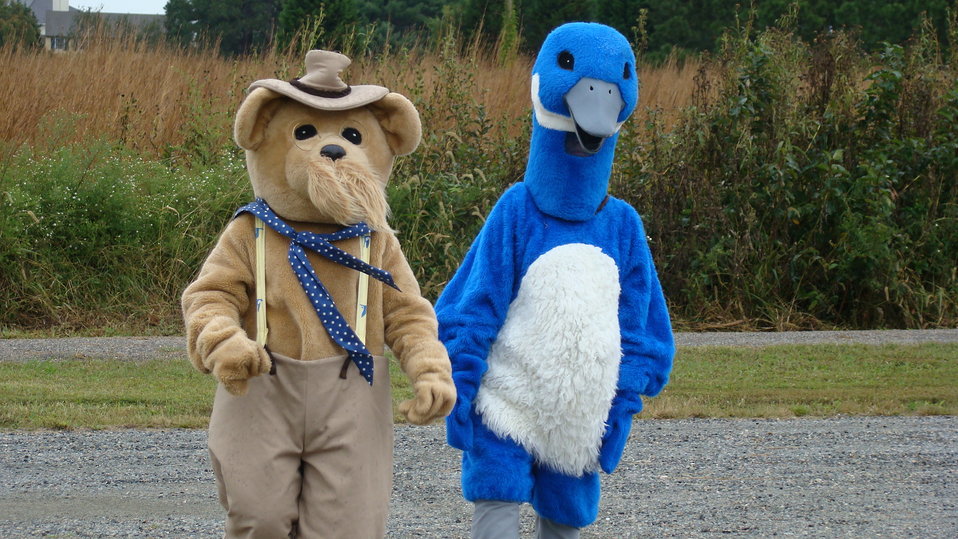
Rappahannock River Valley NWR 15th Anniversary

Puddles and T.R. Bear